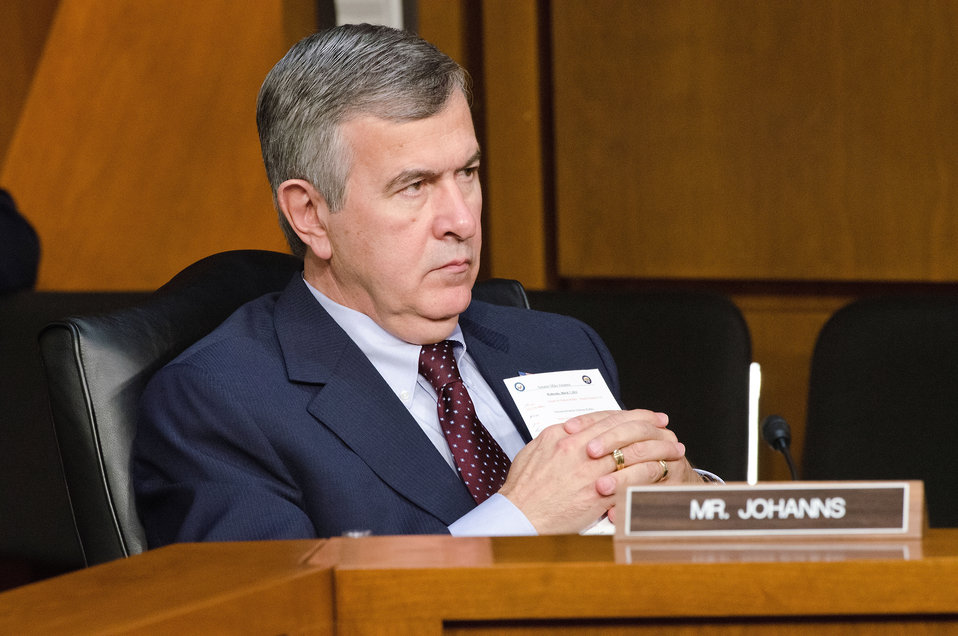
Senator Mike Johanns (NE) listens to Agriculture Secretary Tom Vilsack’s responses during Secretary Vilsack’s testimony on “Healthy Food Initiatives, Local Production and Nutrition,” before the Senate Agriculture Committee on Wednesday, March 7, 2012 in Washington, D.C.